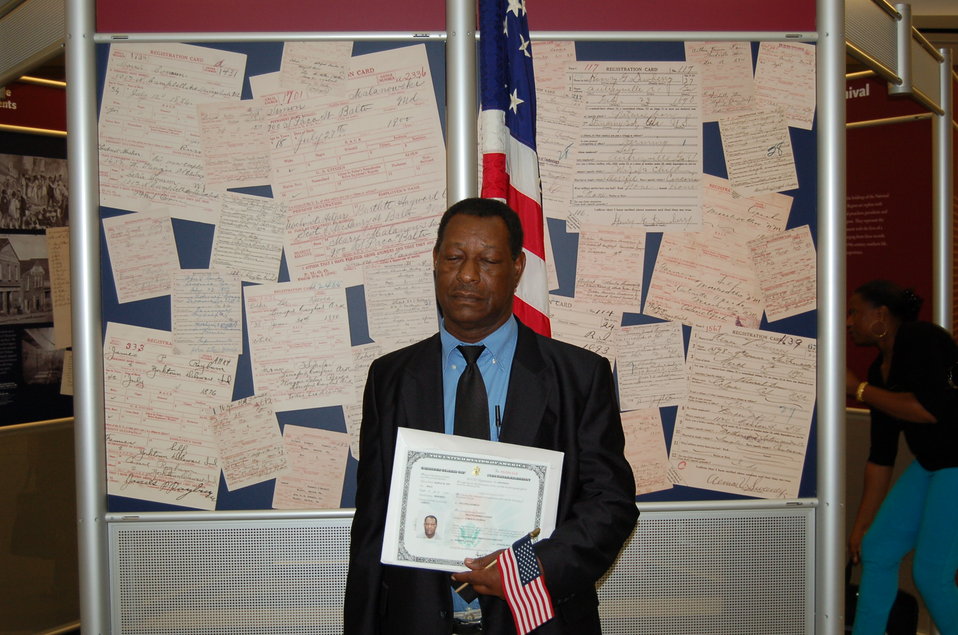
New Citizens